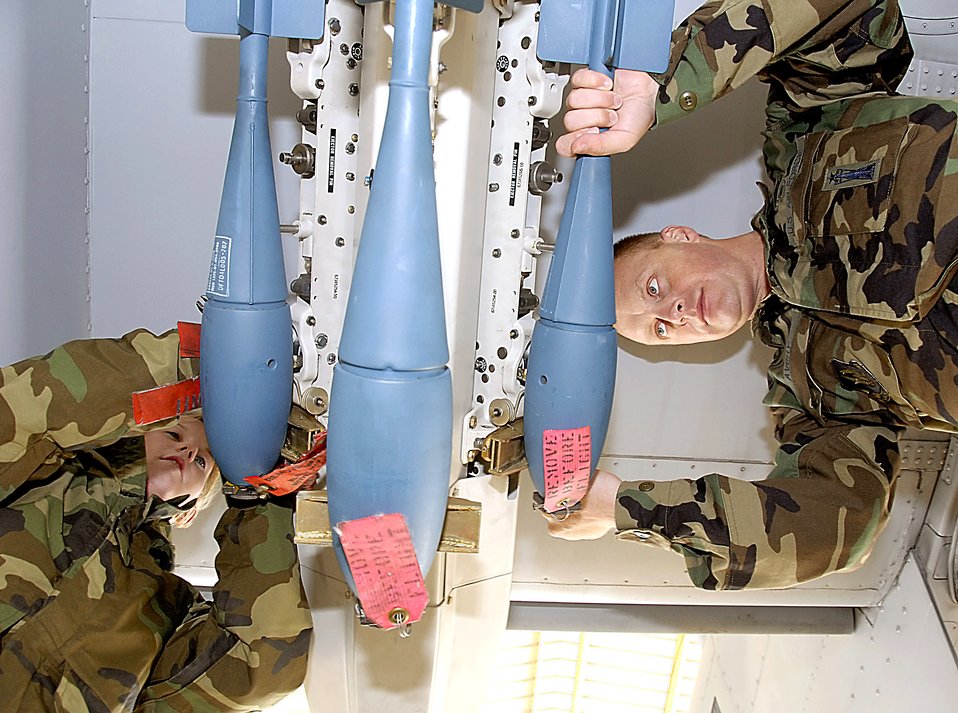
Bomb loader bites bullet to become doctor

Senior Airman Heather Bax (left) and Tech. Sgt. Scott Avery secure weapons on a 442nd Fighter Wing A-10 Thunderbolt II at Whiteman Air Force Base, Mo. The two are part of a three-person weapons-loading crew. Sergeant Avery graduated from the Kansas City University of Medicine and Biosciences College of Osteopathic Medicine in September. Now a doctor of osteopathic medicine, he has chosen to stay in his Air Force Reserve job as an aircraft armament systems specialist with the 442nd Aircraft Maintenance Squadron.